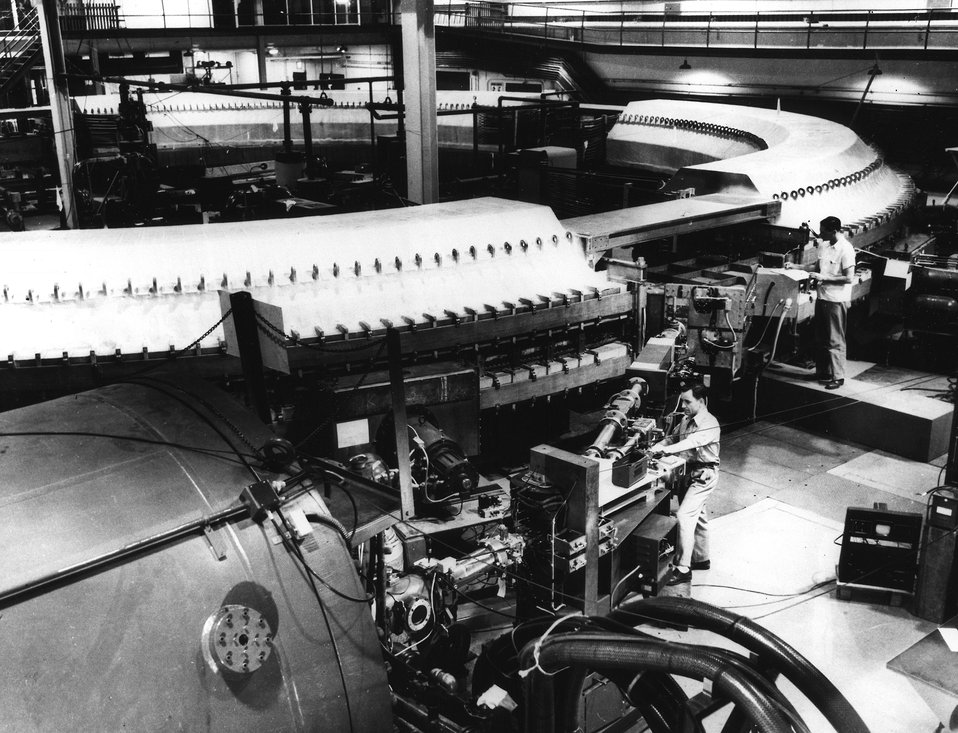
Injection equipment connected to Brookhaven cosmotron. c. 1958